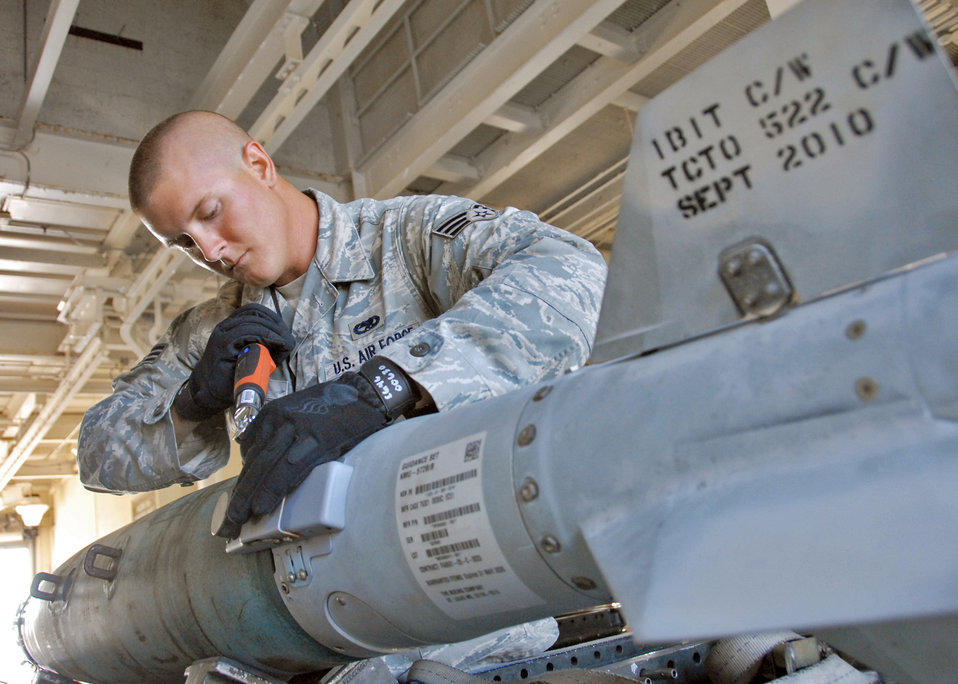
Be careful, be very careful

Senior Airman Richard Olney tightens down the bolts on a GBU-38 at Eglin Air Force Base, Fla. Airmen Olney and others with the 46th Maintenance Squadron build and load bombs for both developmental and operational flight testing.